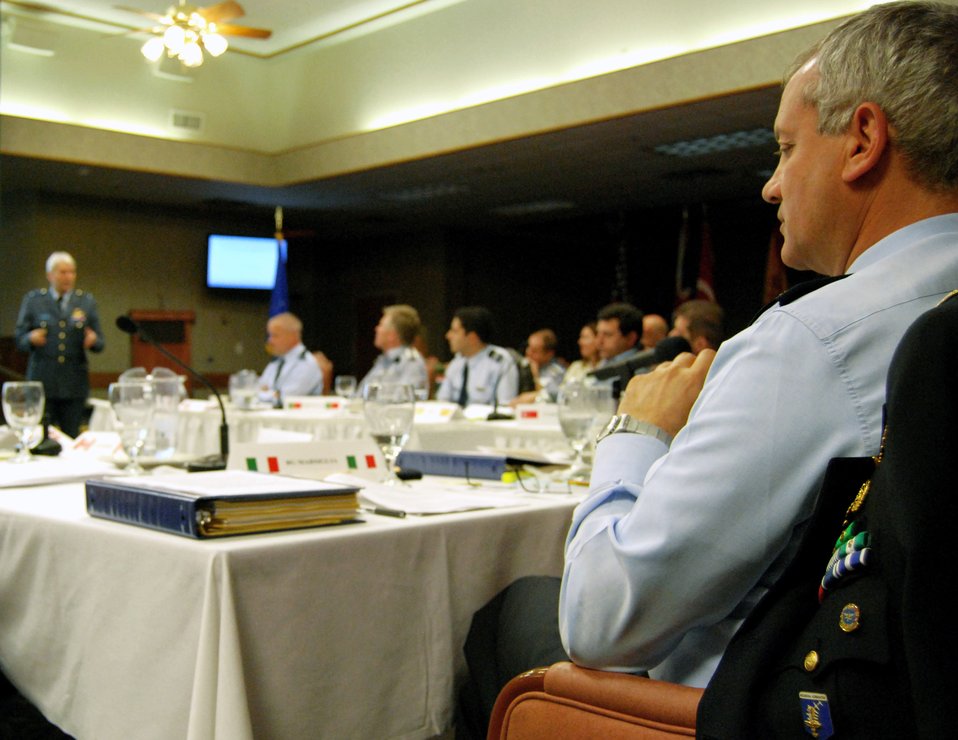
Euro-NATO committee has eyes on future

Italian Brig. Gen. Franco Marsigliam (right) listens as the Royal Netherlands Air Force's Air Commodore Peter Berlijn makes final comments to steering committee members of the Euro-NATO Joint Jet Pilot Training Program April 4 at Sheppard Air Force Base, Texas. The general is the new chairman of the committee, replacing Air Commodore Berlijn.